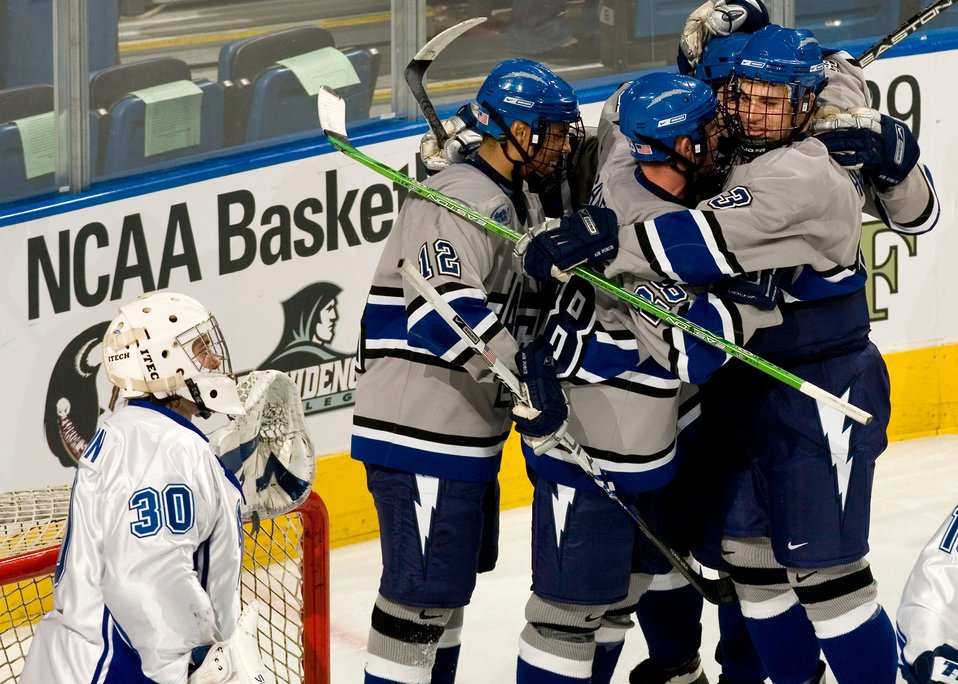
Celebration on Ice

Air Force celebrates after freshman Jeff Hajner scored his first career goal to give the Falcons a 5-3 lead in the second period. Air Force went on to win the game, 7-5, and advance to the championship game.